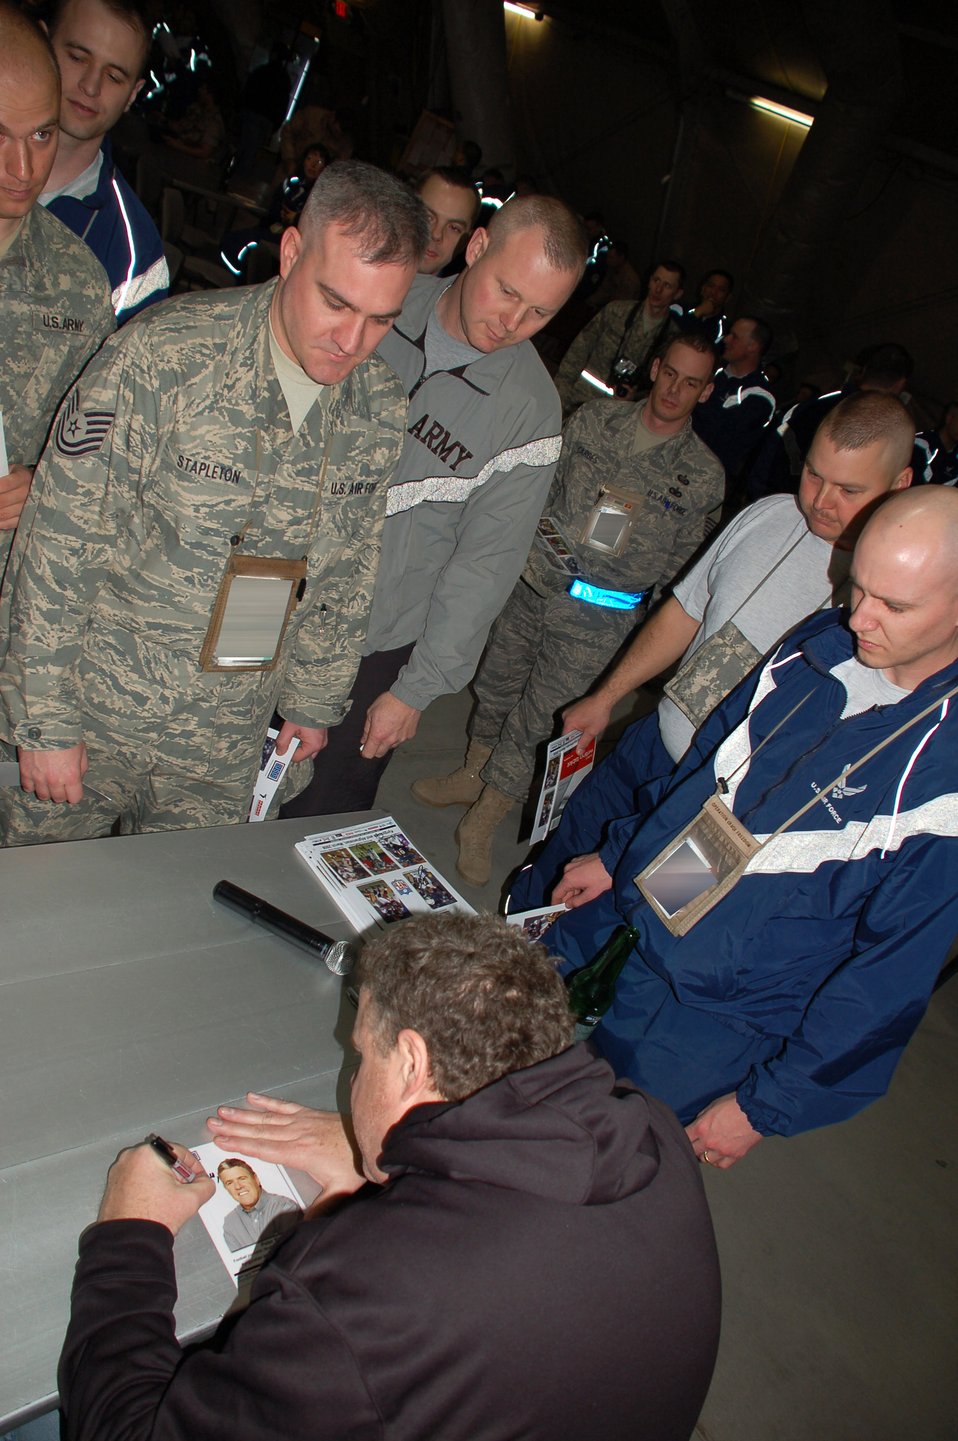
NFL players kick off USO tour in Kyrgyzstan

Sports Illustrated writer Peter King signs autographs for Airmen March 4 at the recreation center on Manas Air Base, Kyrgyzstan. Mr. King traveled to Kyrgyzstan as part of the United Service Organizations National Football League tour that brought San Diego Chargers Luis Castillo, Chicago Bears Tommie Harris, and Carolina Panthers Mike Rucker to see military members supporting operations in Afghanistan. The visitors spent the day visiting Airmen at their work centers to see firsthand how members of the 376th Air Expeditionary Wing support the war on terrorism. They participated in a question and answer session with the Airmen, Soldiers and Marines transiting the base, hanging around afterward to sign autographs for sports enthusiasts.